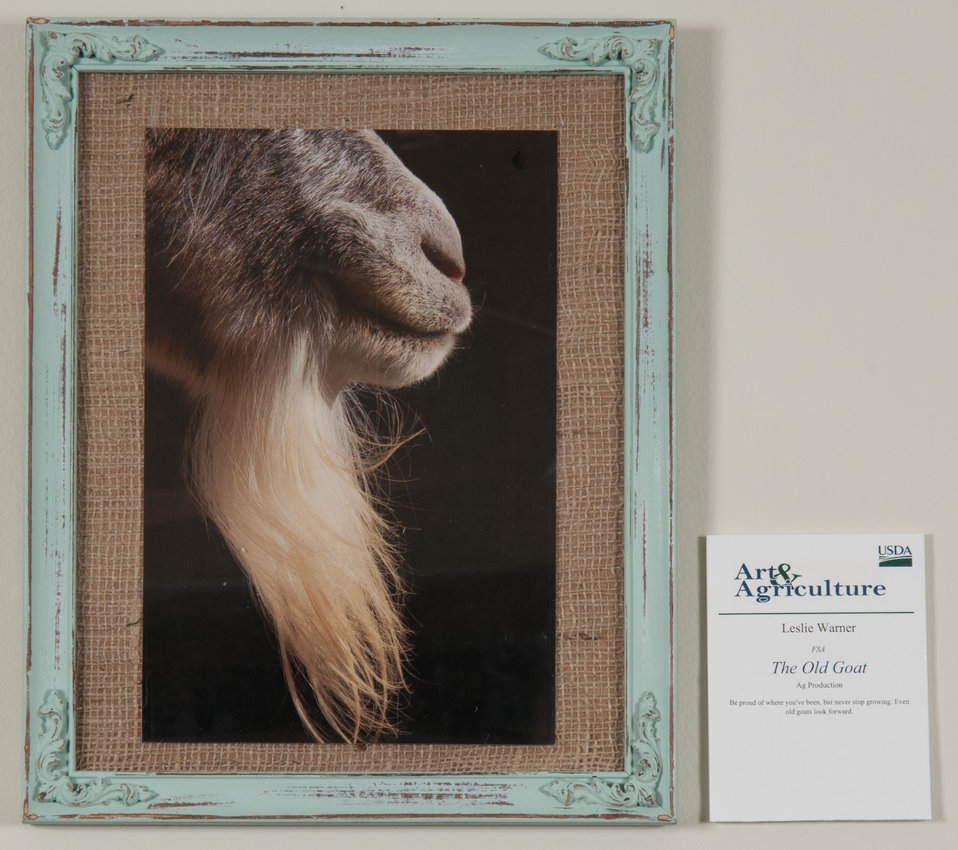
Online Viewer's Choice entries of the 2013 Art & Agriculture, Tuesday, July 9, 2013, in the South Building, Washington, D.C. Themes were expressed by employees from across the department and the contest was open to full-time and part-time USDA employees. Winning artwork will be displayed till the end of the year. U.S. Artistic expression is a creative outlet that is vital for an individual to grow and develop.